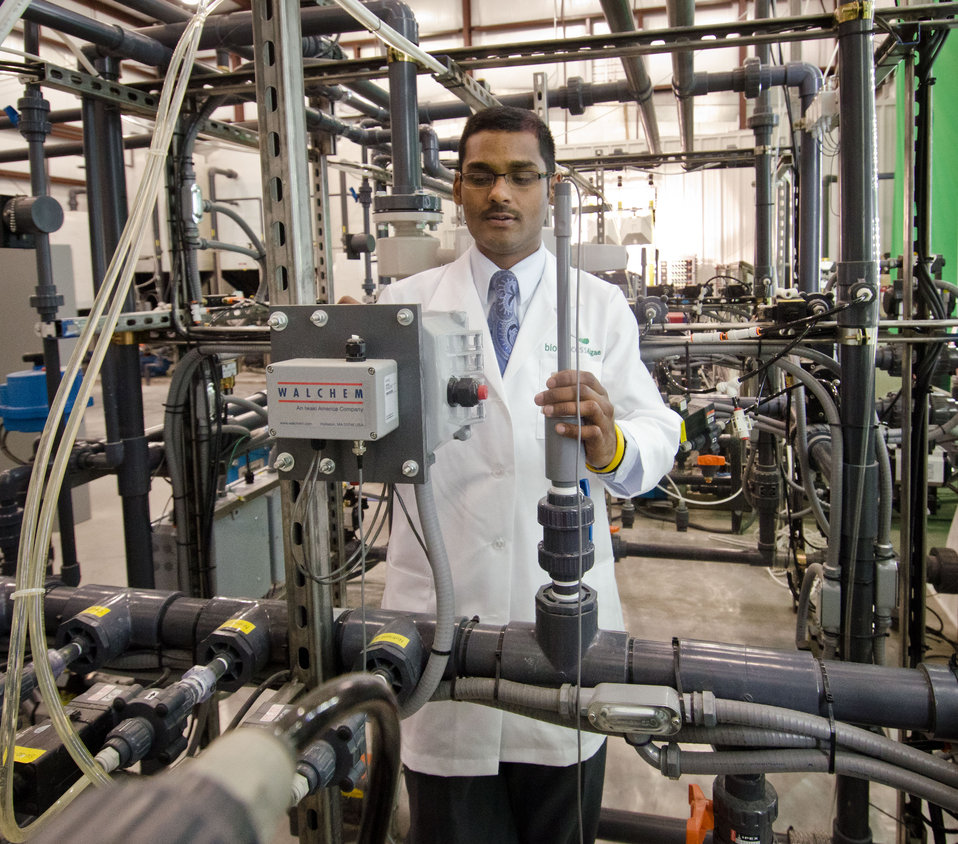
BioProcess Algae Field Engineer Thiruvenkadam Viswanathan at the BioProcess Algae facility of the Green Plains Renewable Energy (GPRE), Inc. (GPRE) checks a control and monitor system on Friday, Apil 15, 2011. This operation is co-located within GPRE’s ethanol factory where BioProcess Algae technology is used to treat waste products, carbon dioxide, recycled heat and water to mass-produce algae. Algae from this facility are used for animal feeds, pharmaceutical and beauty products.